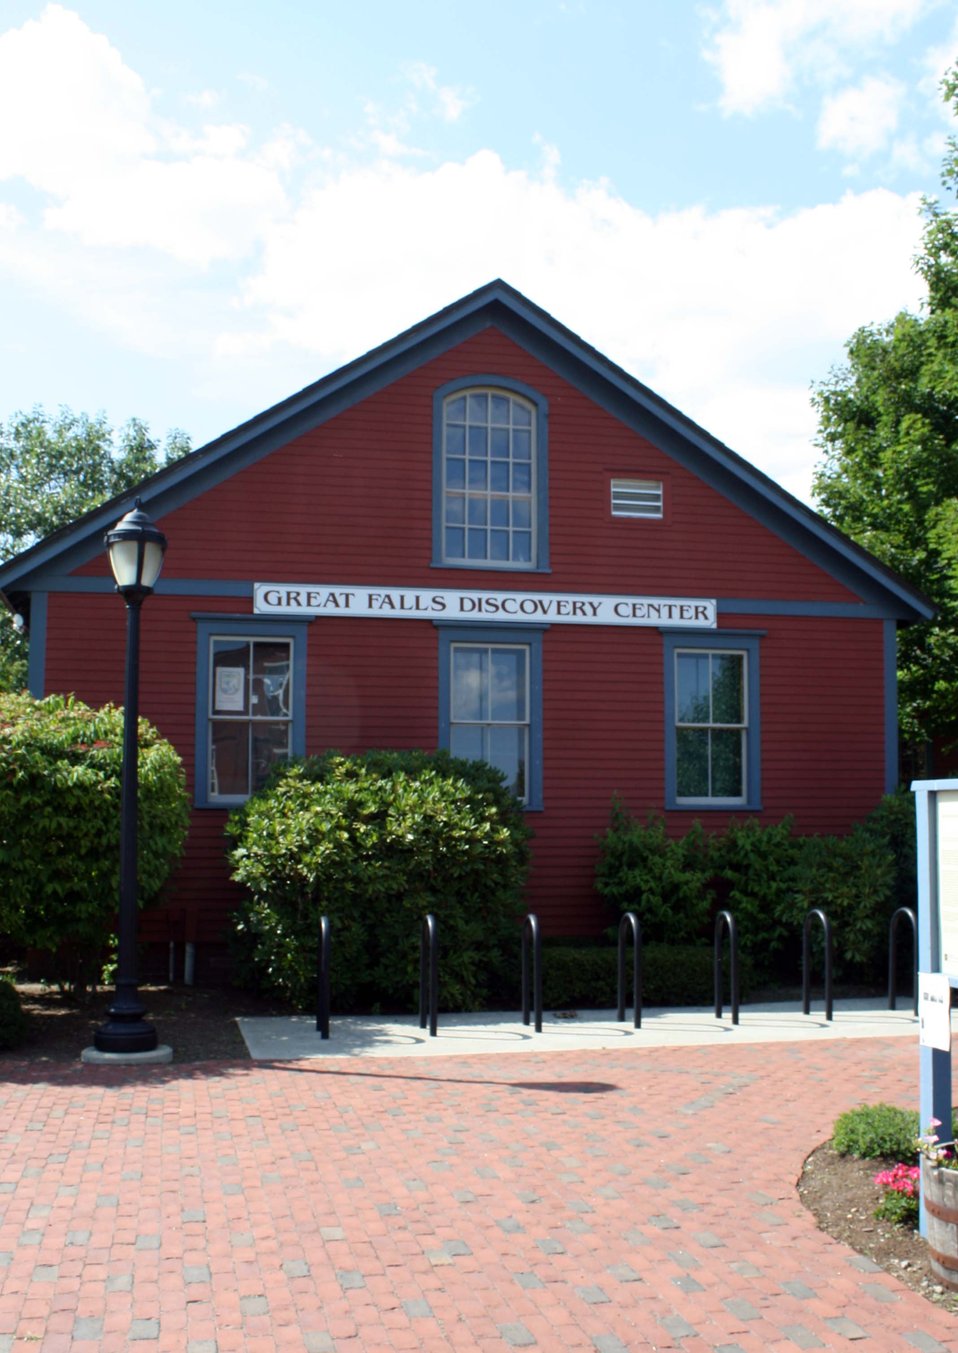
Great Falls Discovery Center

Turners Falls, Massachusetts.